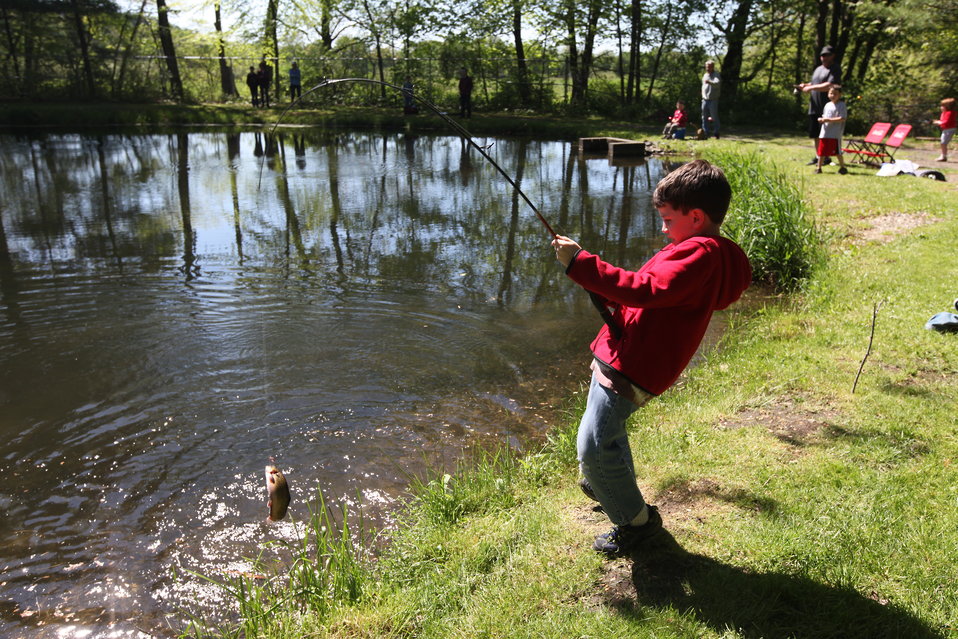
Youth Fishing Derby 2012

Megan Nagel/USFWS